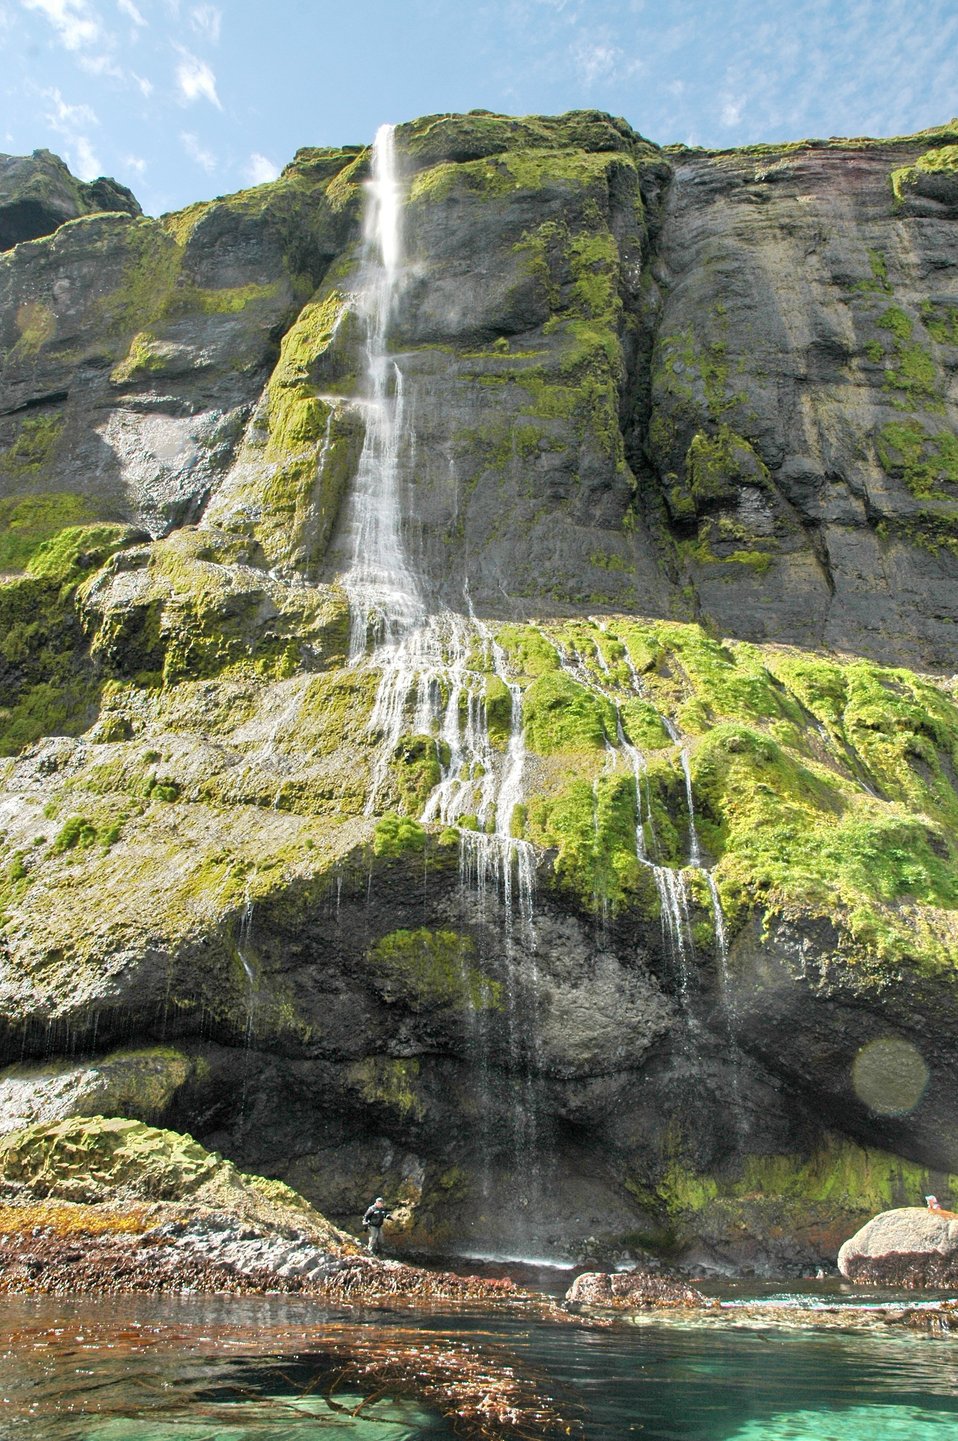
A beautiful waterfall flowing over moss-covered rocks to a kelp forest